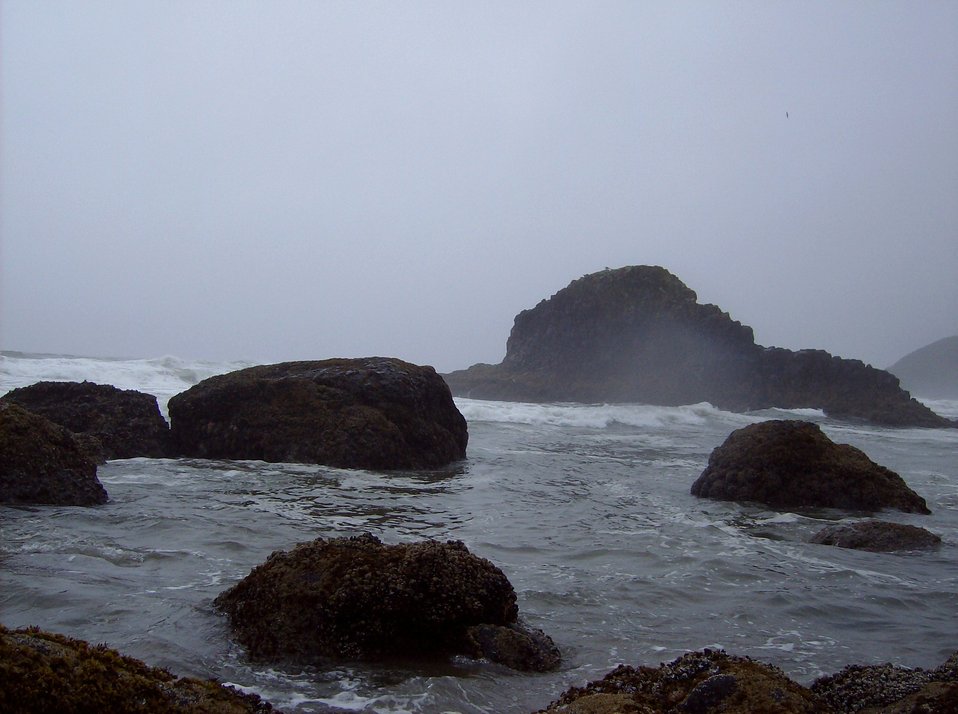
Rocks, surf, fog, seaweed, and tide pools at Ecola State Park.